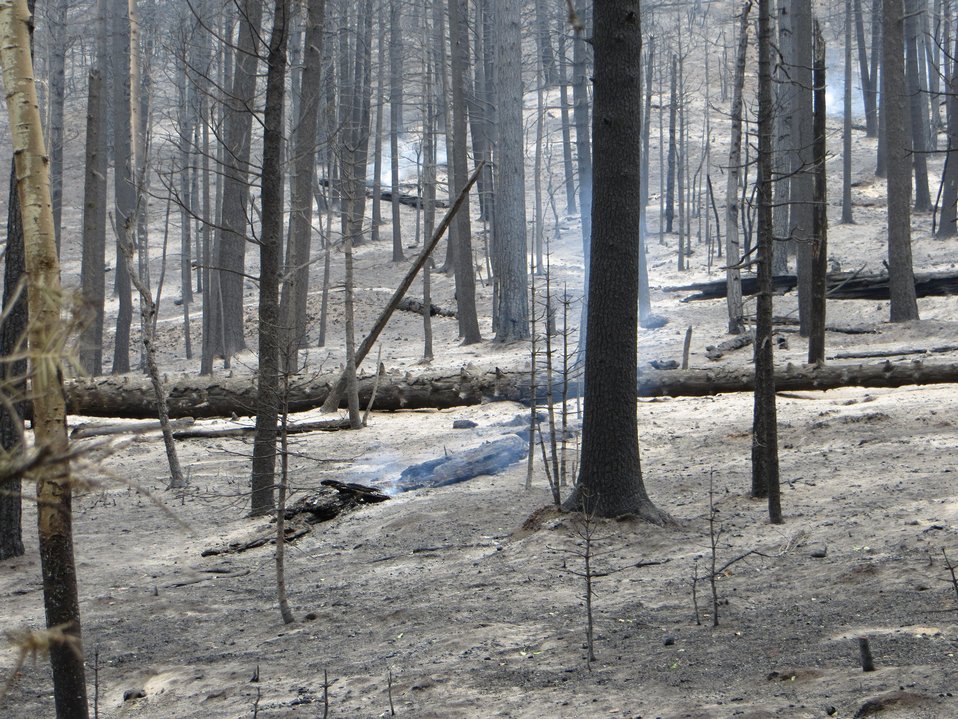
A burned out section of forest at the Thompson Ridge Fire in the Sante Fe National Forest approximately 10 miles north of Jemez, NM began on May 31, 2013 by human ignition has consumed over 29, 903 acres.